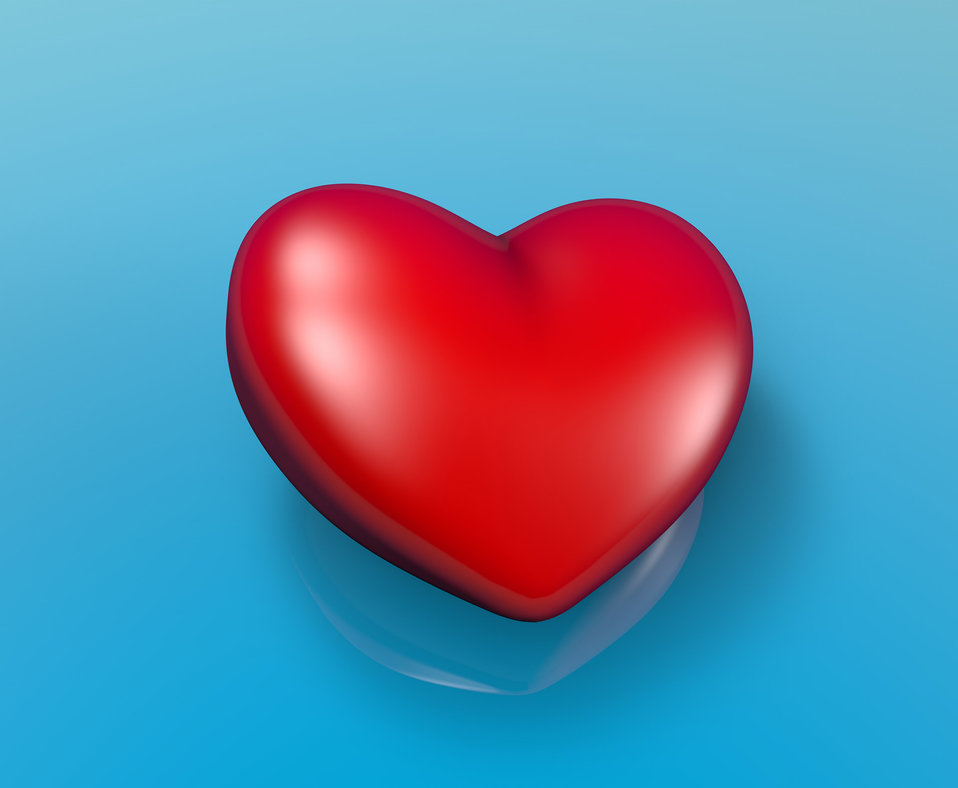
Heart in high resolution 300dpi.